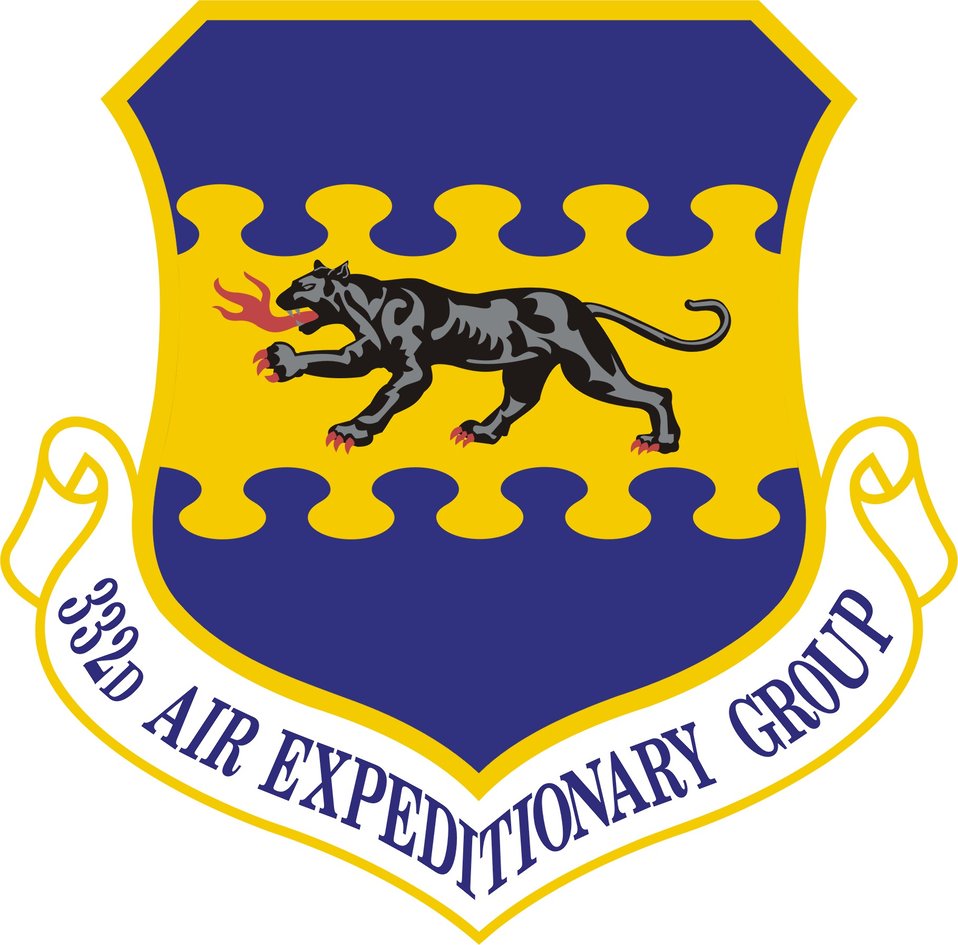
332nd AEW shield

332nd Air Expeditionary Group shield